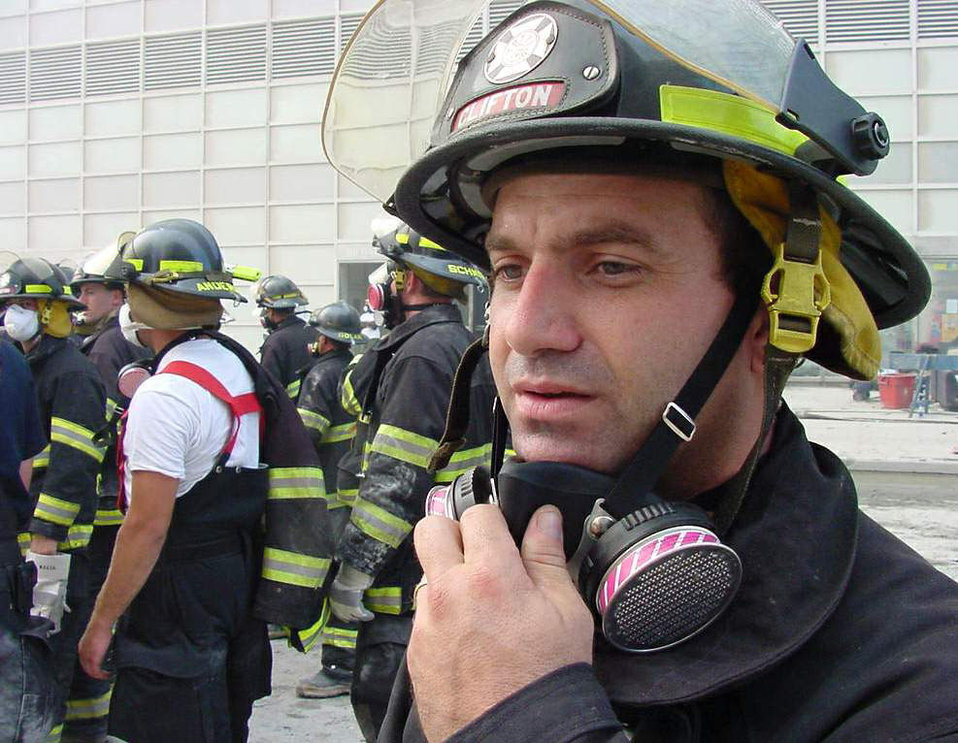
Recovery Efforts

NEW YORK -- Tech. Sgt. Nick Marchisello, an Air Force Reservist and New Jersey firefighter, awaits the order to enter the rubble of the North Tower of the World Trade Center during survivor recovery efforts after the Sept. 11 terroist attacks. Marchisello is a member of the 514th Civil Engineering Squadron at McGuire Air Force Base, N.J.